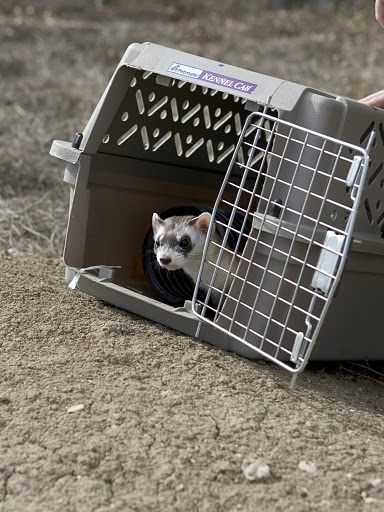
Releasing a Black-footed Ferret